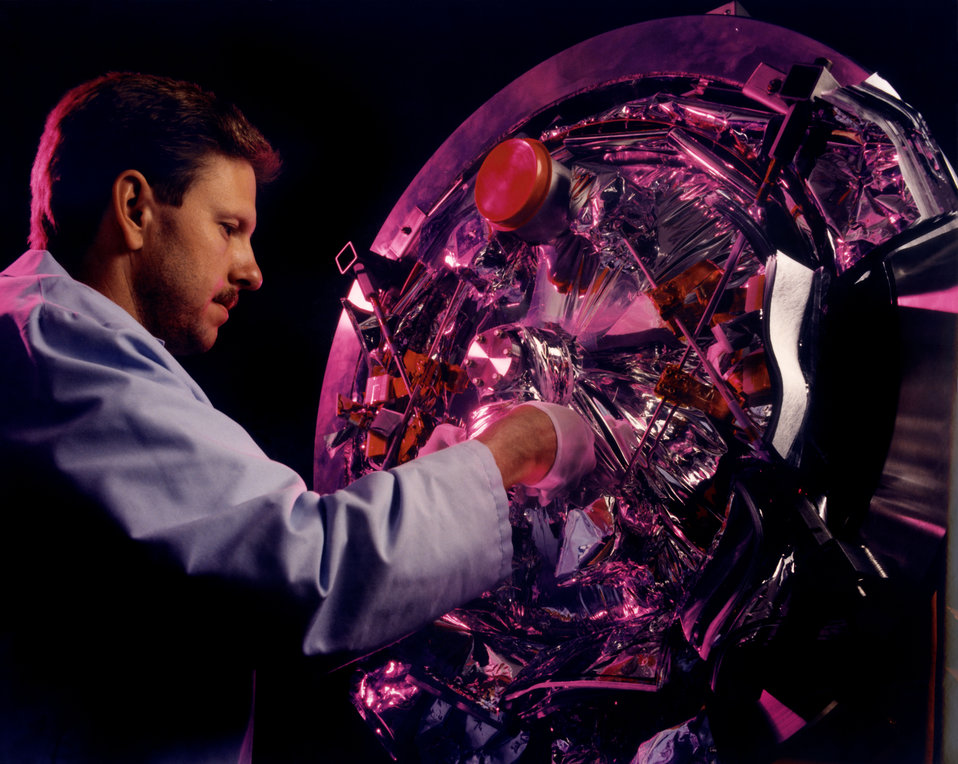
Continuous Electron Beam Accelerator Facility CEBAF Thomas Jefferson National Accelerator Facility Newport News Virgina

92-709-5 DOE photo Lynn Freeny

Continuous Electron Beam Accelerator Facility CEBAF Thomas Jefferson National Accelerator Facility Newport News Virgina 8-20-1992